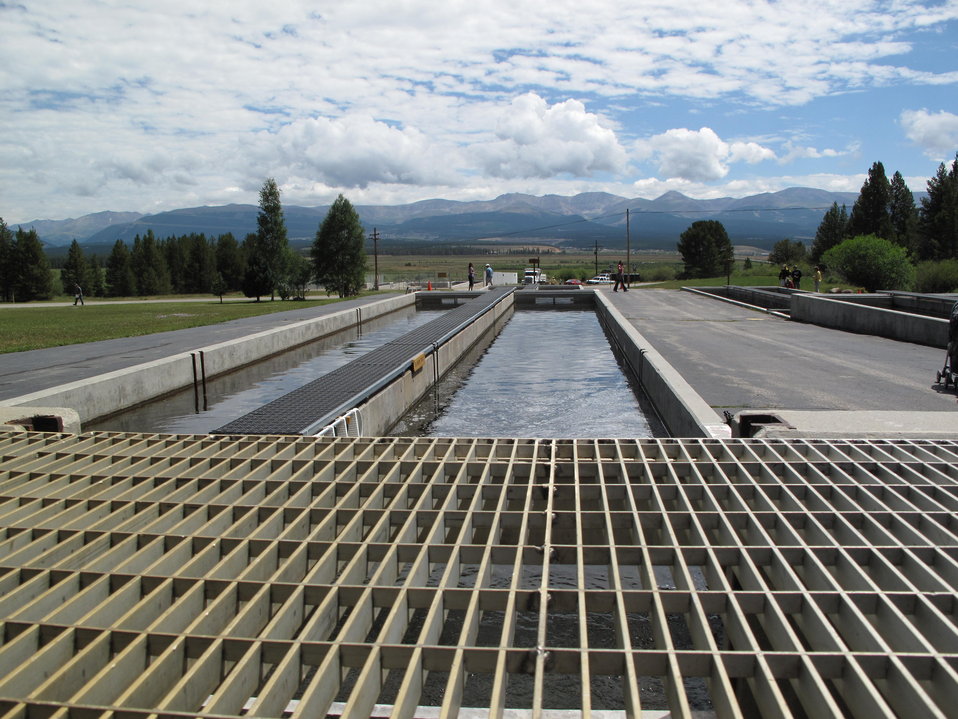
Leadville National Fish Hatchery is situated on over 3,000 acres of land. At an elevation of roughly 10,000 ft. and surrounded by peaks exceeding 14,000 ft., the property offers beautiful views.